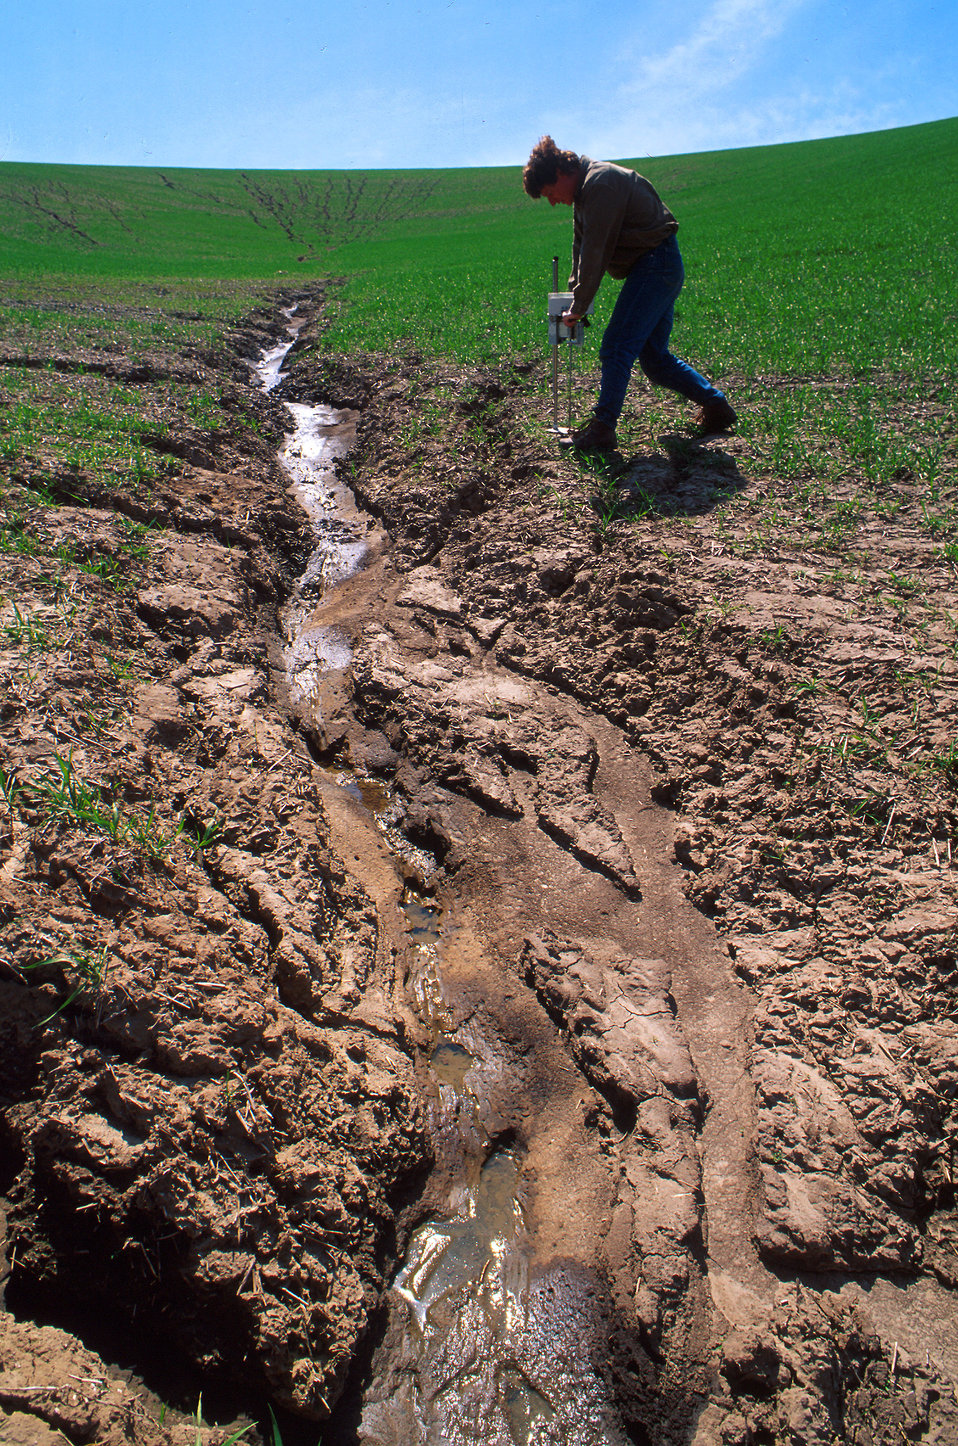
U.S. Department of Agriculture (USDA) Agricultural Research Service (ARS) scientists examines the severe soil erosion in a wheat field near Washington State University, WA.